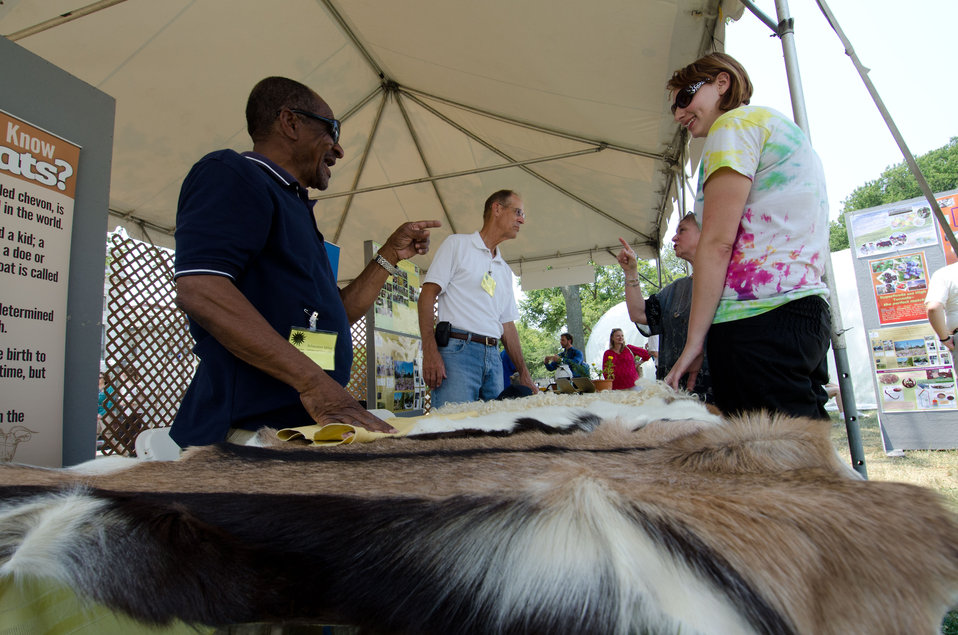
Fort Valley State University Goat Research Professional Schauston Miller and Professor Will R. Getz, Ph.D. answer questions from Smithsonian Institution volunteer Emma Prins, at the 1890’s Historically Black Colleges and Universities tent of the 2012 Smithsonian Folklife Festival, Thursday, June 28, 2012 on the National mall in Washington, D.C. One of the three themes this year is “Campus and Community.” It celebrates the 150 years of the USDA and the Land-Grant University System. The U.S. Department of Agriculture (USDA) and the Land-Grant system extend education across the country, contributing to American agriculture success and rural prosperity. “Campus and Community” has demonstrations, discussions, hands-on activities, and entertainment to that showcase the many ways that this partnership works to improve American agriculture and rural life.